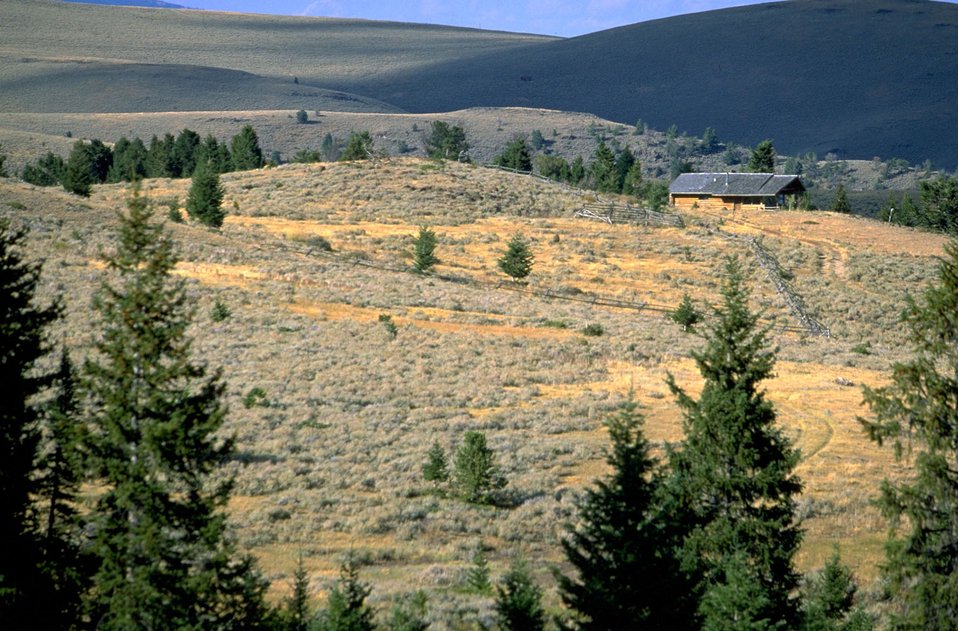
A cabin surrounded by sagebrush and hills